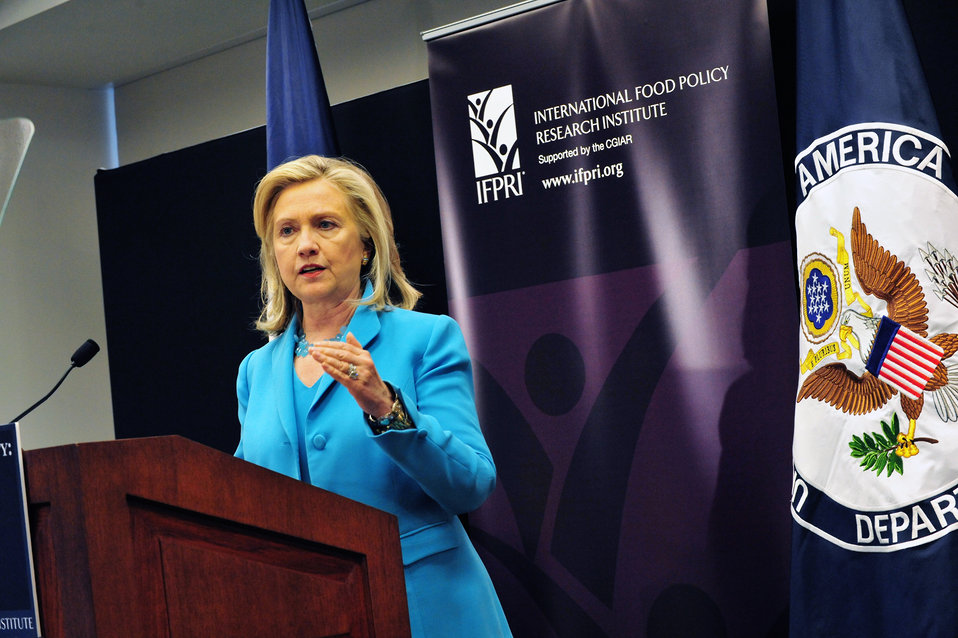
Secretary Clinton Delivers Remarks on the Humanitarian Crisis in the Horn of Africa

U.S. Secretary of State Hillary Rodham Clinton delivers remarks on the humanitarian crisis in the Horn of Africa at the International Food Policy Research Institute in Washington, D.C., on August 11, 2011.